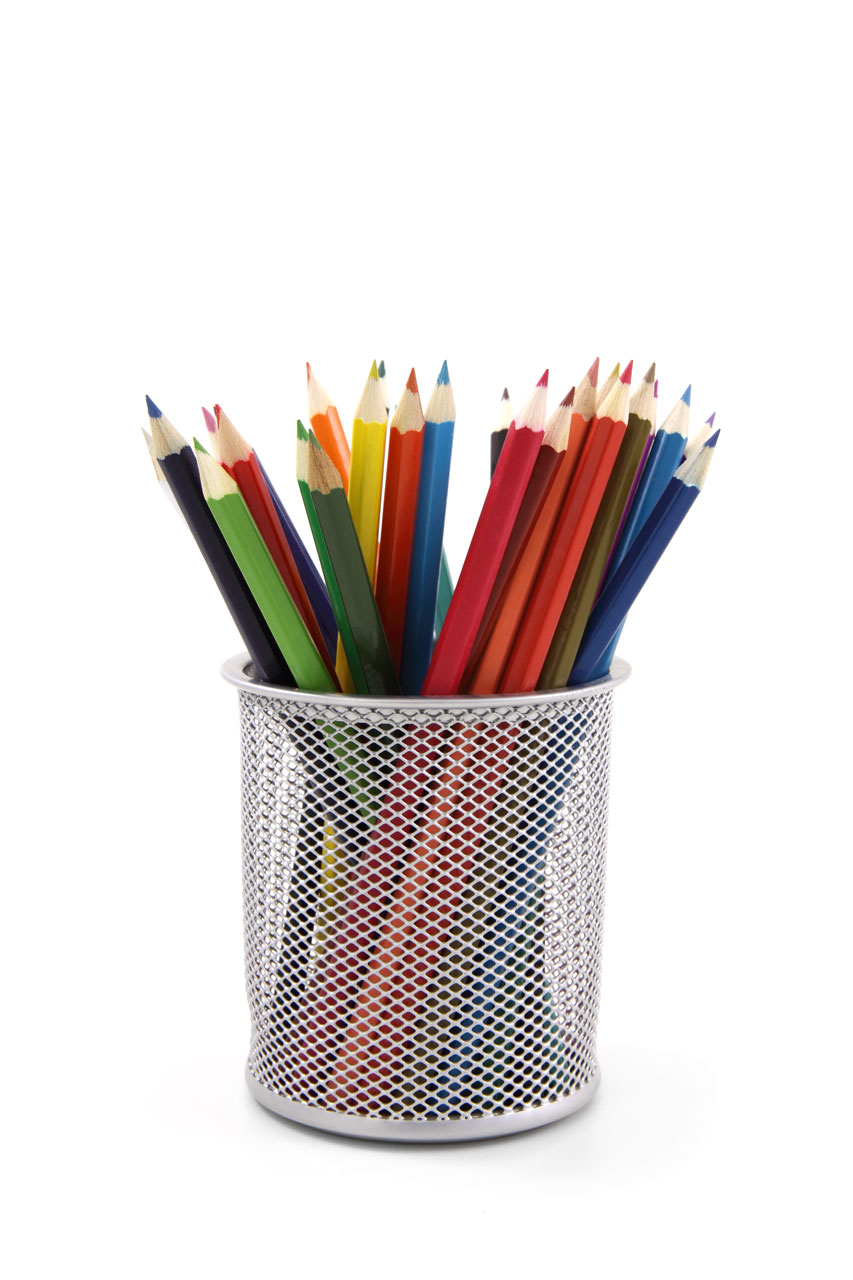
Colored pencils in pencil holder.